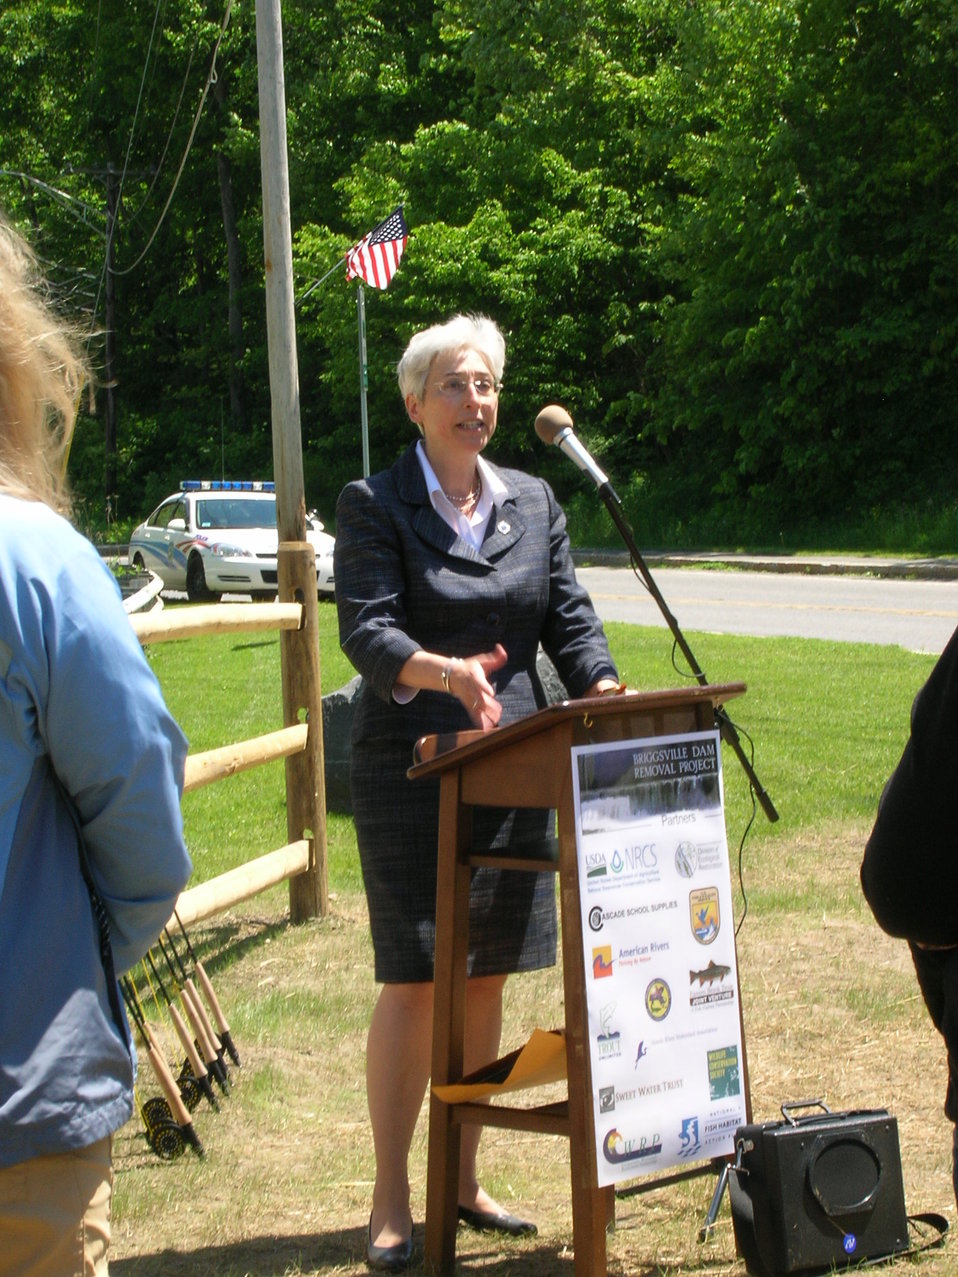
Briggsville Dam Removal Celebration